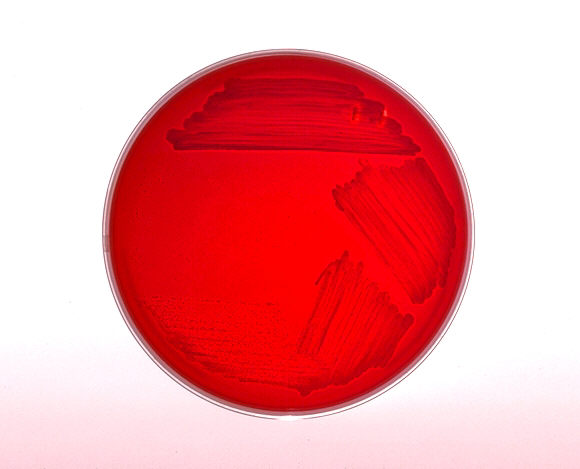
Blood agar plate culture of Corynebacterium pseudotuberculosis.